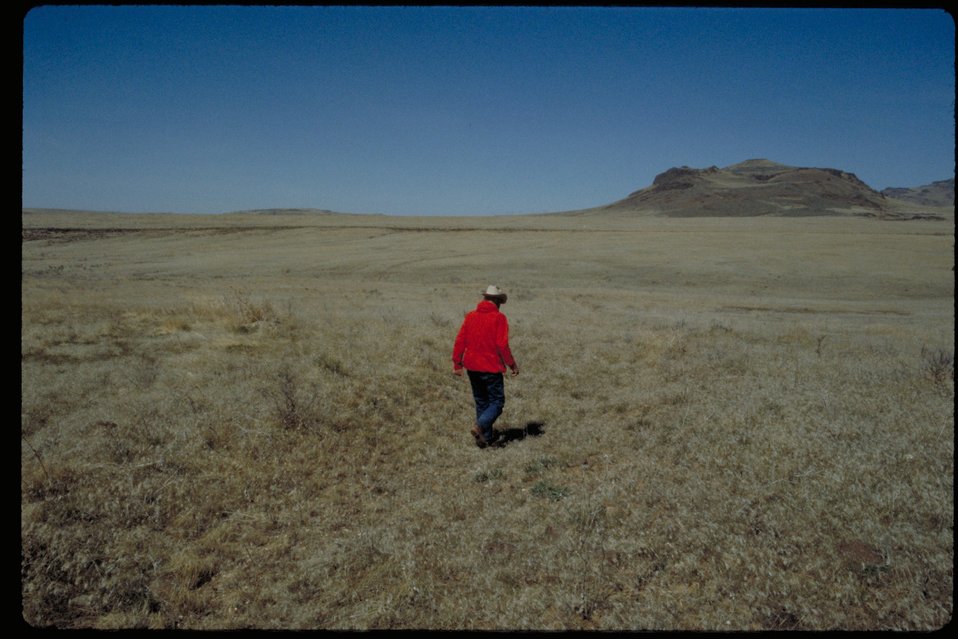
Oregon Trail Southeast of Teapot Dome Lower Snake River District